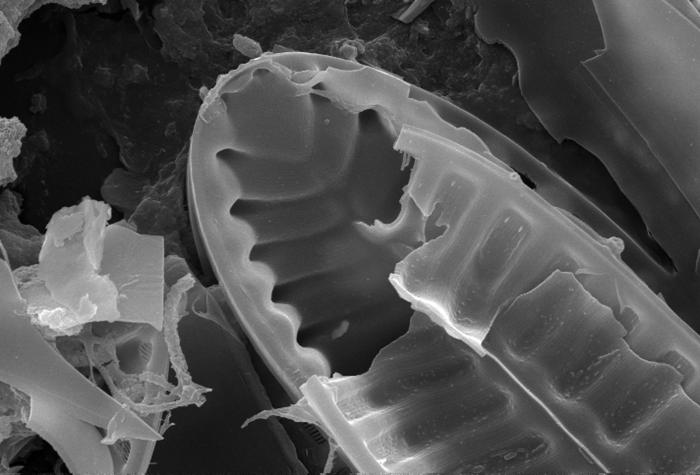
This scanning electron micrograph (SEM) of an untreated water specimen extracted from a wild stream mainly used to control flooding during inclement weather, revealed the presence of unidentified organisms, which included bacteria, protozoa, and algae. In this particular view, it appears that a diatom had been fractured in the processing of this specimen. Surrounding this diatomic microorganism, was a large biofilm mass within, and around which were numerous protozoan amoeboid and bacterial microorganisms. For a colorized version of this image see PHIL 11703.